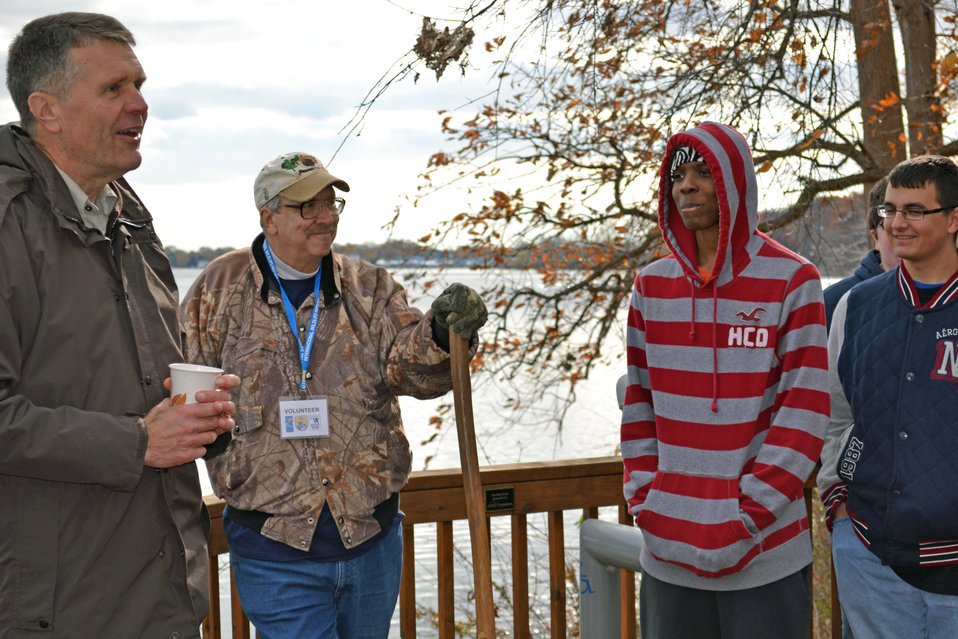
Discussing Conservation Futures

Detroit River International Wildlife Refuge Manager Dr. John Hartig discusses conservation careers with students from Carlson High School.